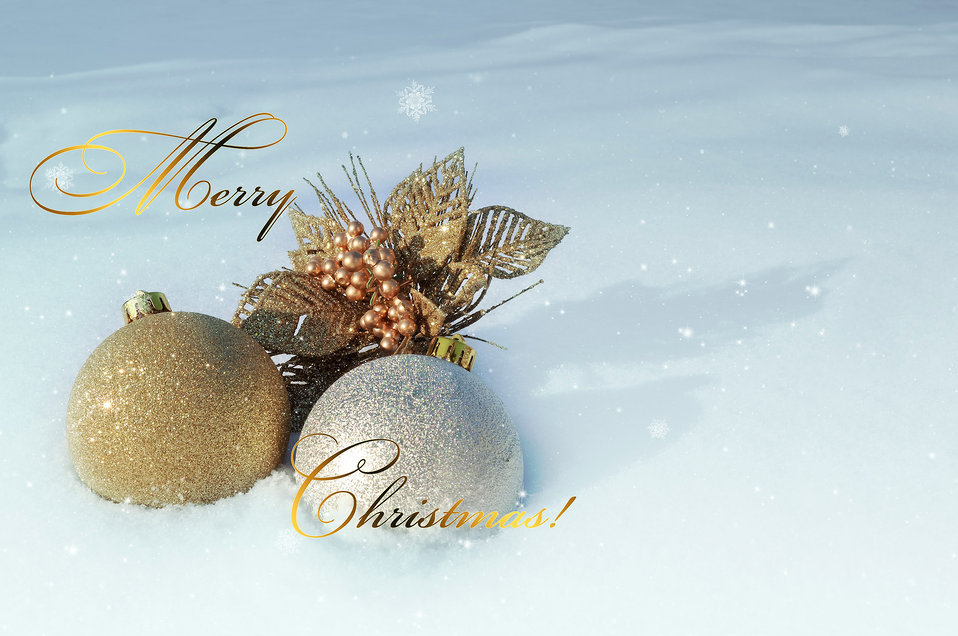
Merry christmas!

Card with christmas. christmas decorations in the snow..